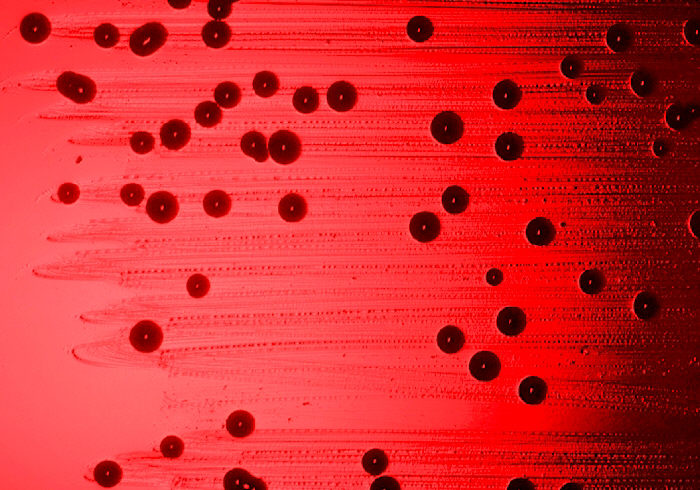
Blood agar plate culture of Haemophilus aphrophilus.